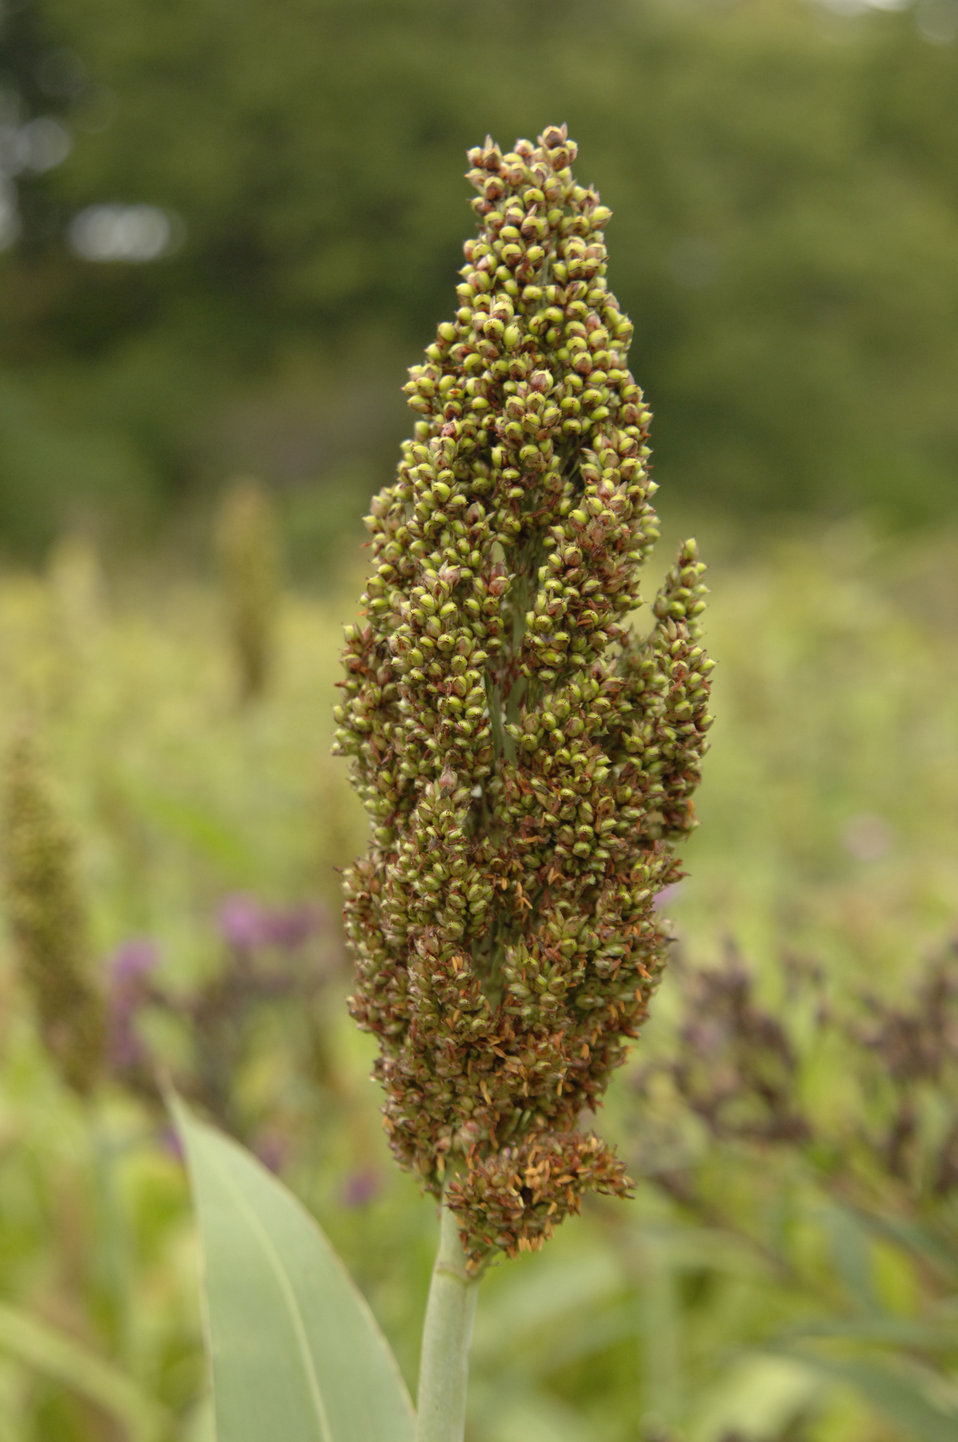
Farmers in Tidewater County, Virginia grow sorghum as an alternative crop for bioenergy on September 9, 2008. Bioenergy is a renewable energy made available from materials derived from biological sources. Sorghum is a grain native to northeastern Africa, topical Africa and southern Africa. Sorghum grows in environments too harsh for corn or sugarcane and is an alternative crop for sugar and grain ethanol production.